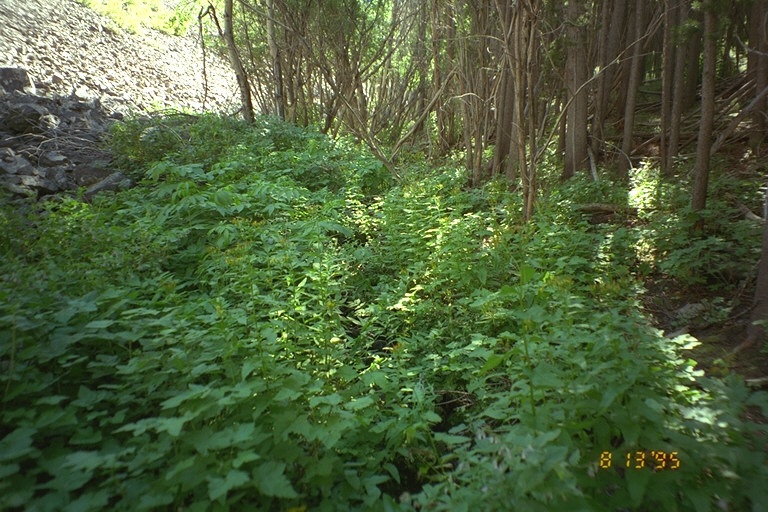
Riparian area Public Lands Salmon Field Office UCSC Upper Columbia Salmon Clearwater District